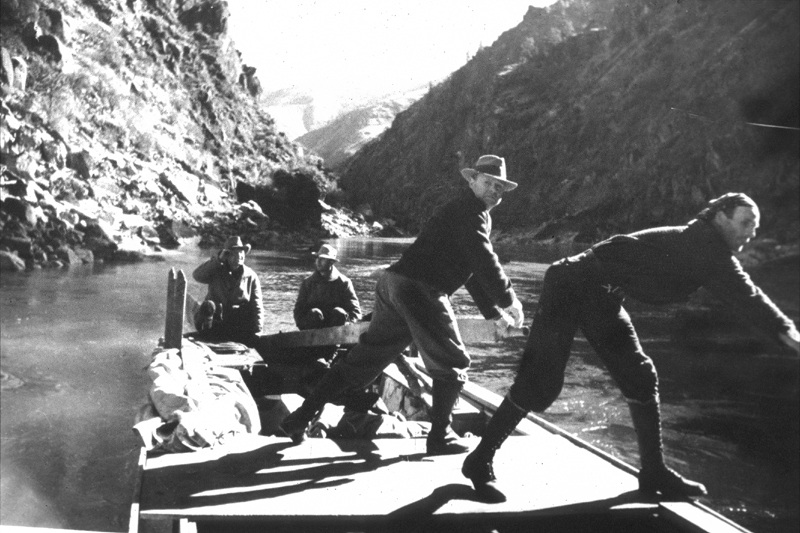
National Geographic Expedition (1935) Lower Salmon River Cottonwood Field Office Upper Columbia Salmon Clearwater District